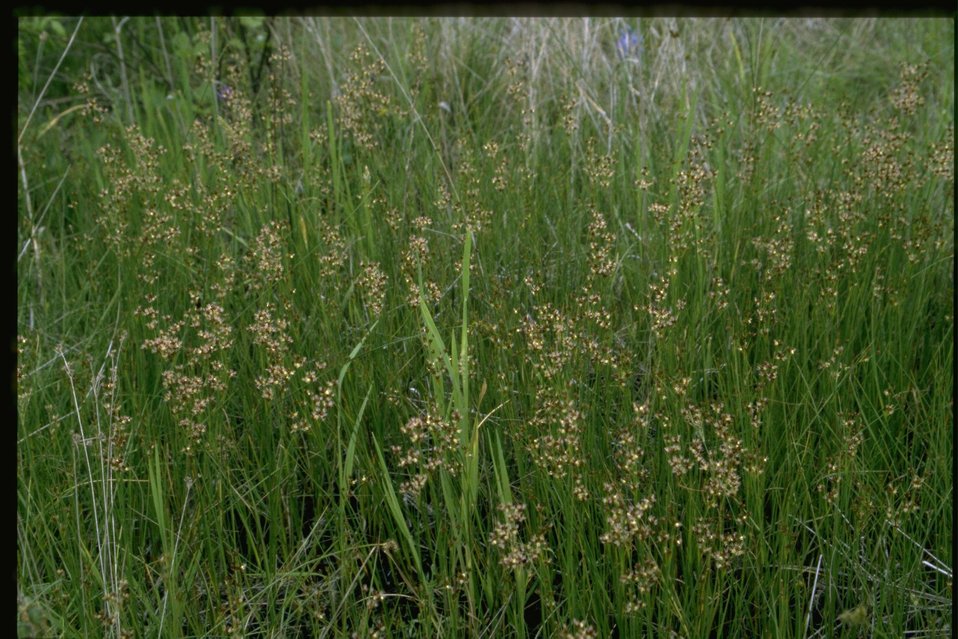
Far shot of Luncus.